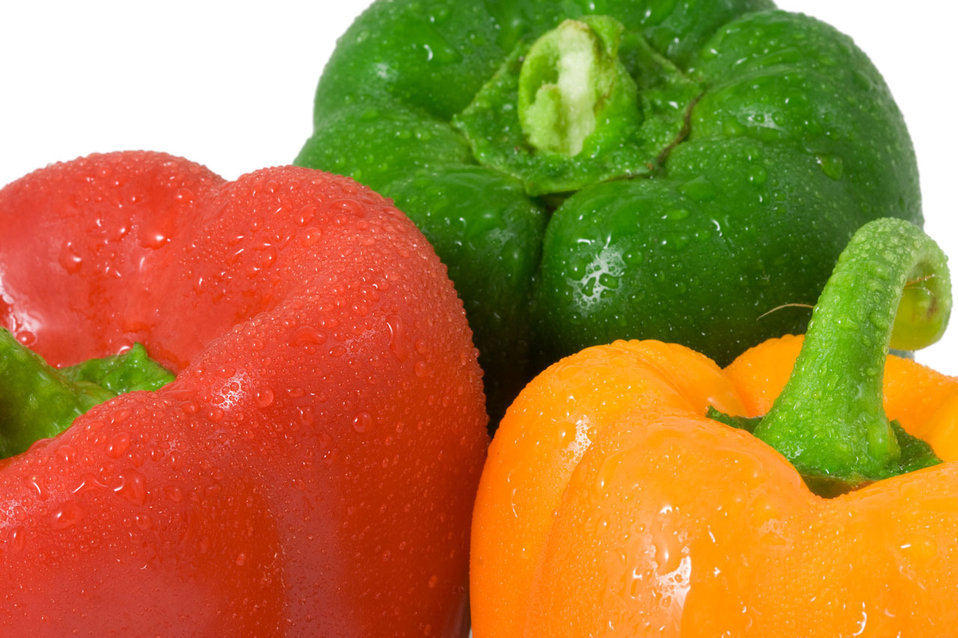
Three peppers

Red green and yellow peppers with water drops.